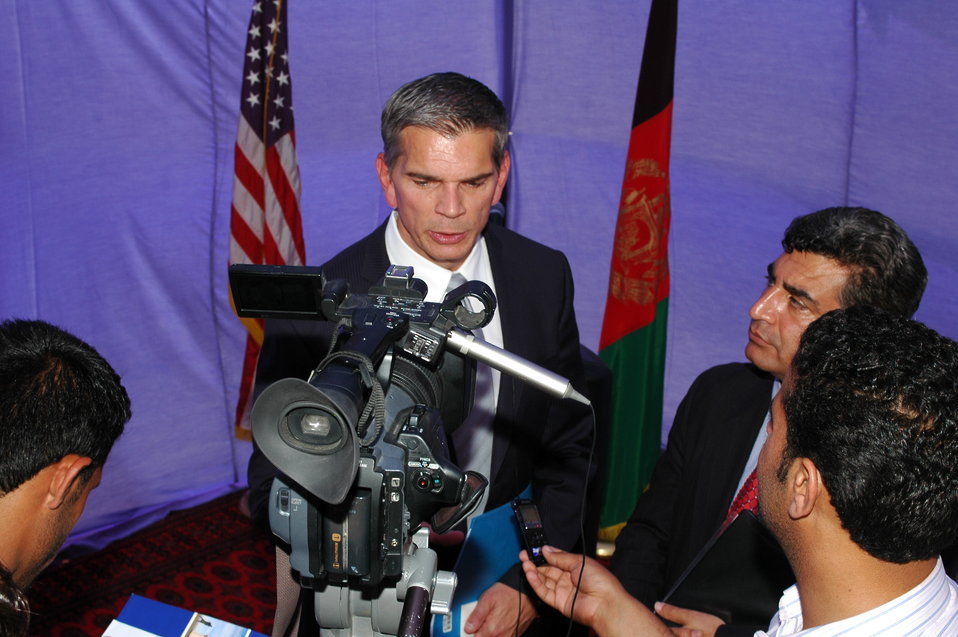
105 MW Tarakhil Power Plant Handover